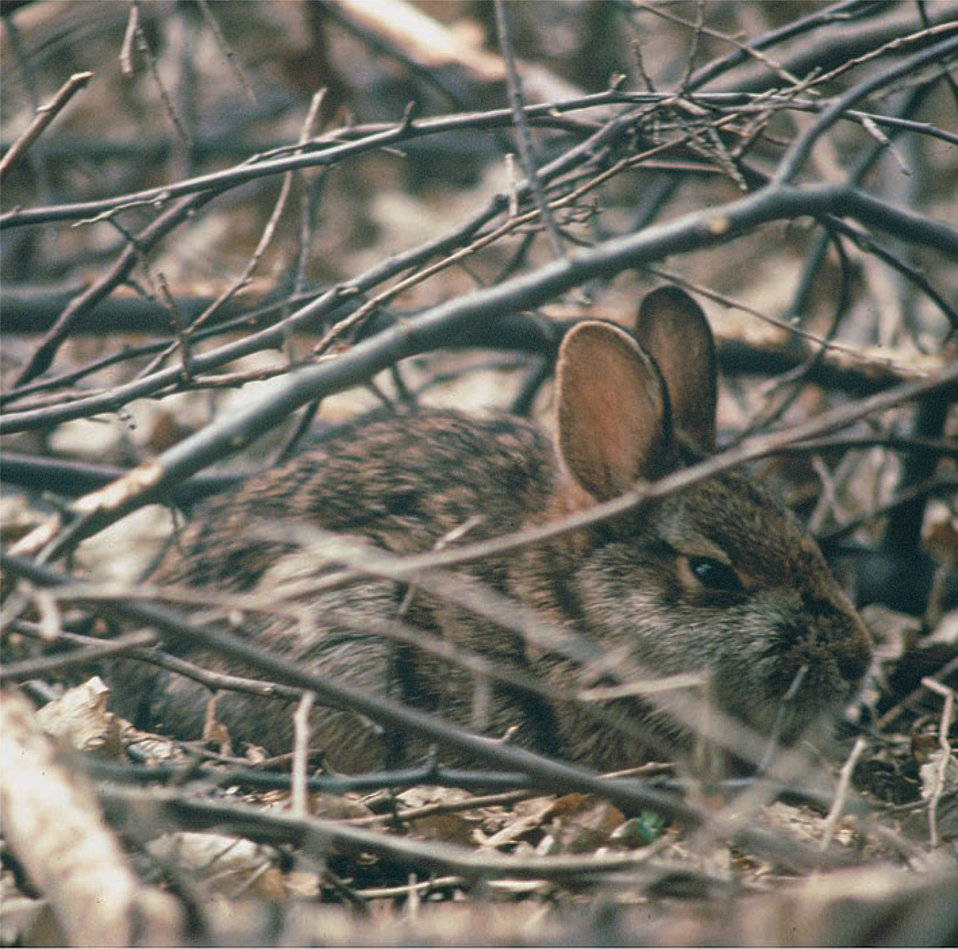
New England cottontail